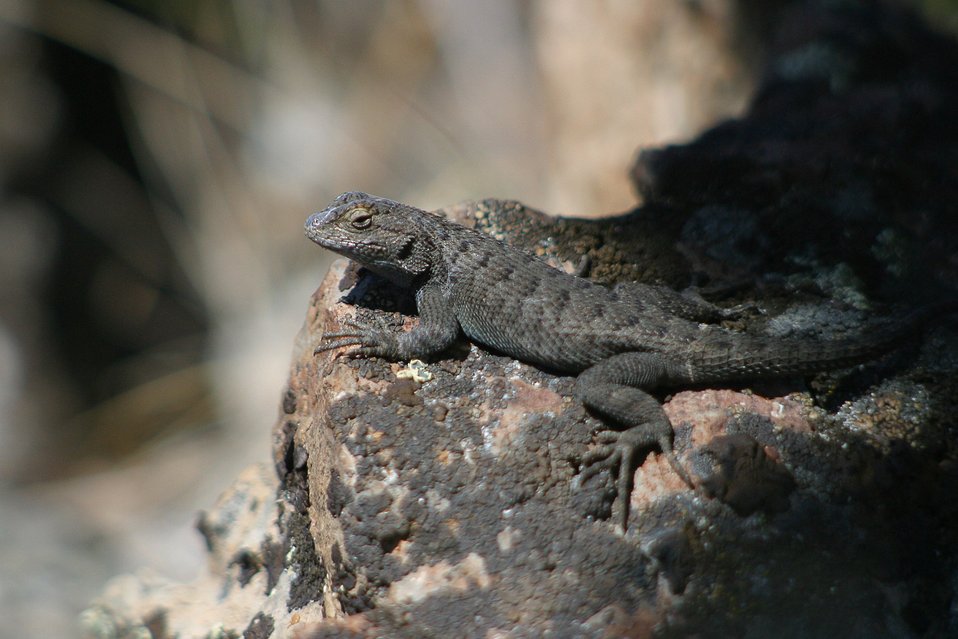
A Western Fence Lizard in the Kiger Wild Horse Viewing Area. The Western Fence Lizard is distributed throughout eastern Oregon, southwest Idaho, all of Nevada, western Utah, Southern California, and northwestern Baja California.